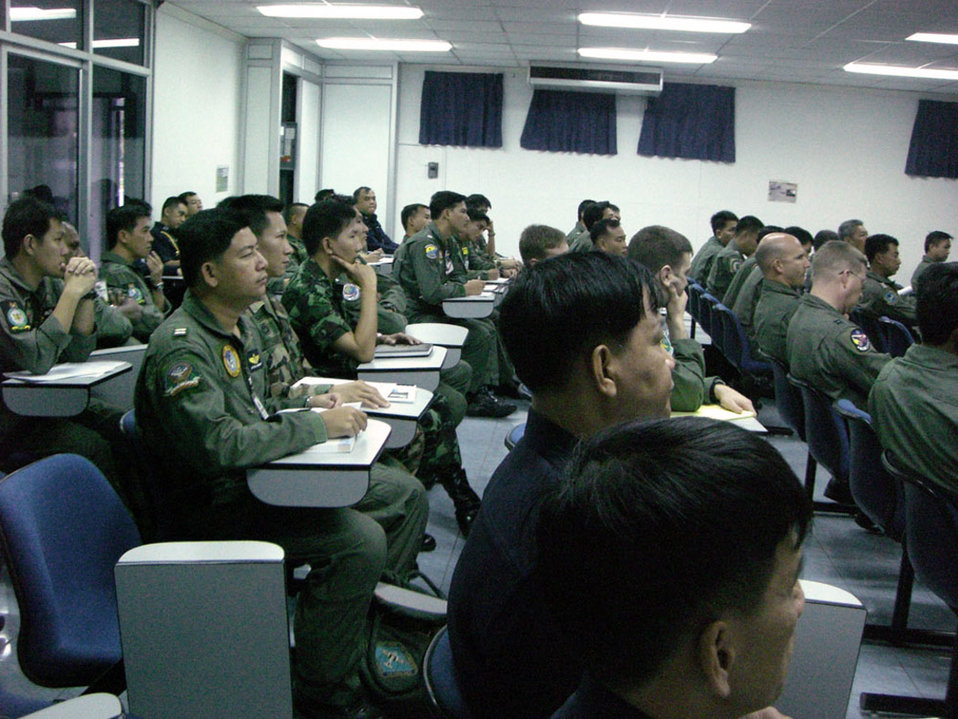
Cope Tiger takes flight

Pilots and aircrew of the Air Force, Marines, Royal Thai air force and the Republic of Singapore air force review the initial Cope Tiger 2008 daily flying operations briefing Jan. 27 at Korat Royal Air Base, Thailand. Cope Tiger is a multilateral joint and combined field training and humanitarian and civic assistance exercise involving Thailand, Singapore and the United States. The Thai-, Singaporean- and U.S.-hosted exercise enhances combined readiness and interoperability, reinforces U.S. commitment to the Southeast Asian region, and demonstrates the U.S. capability to project combined and joint forces strategically in a multilateral environment.